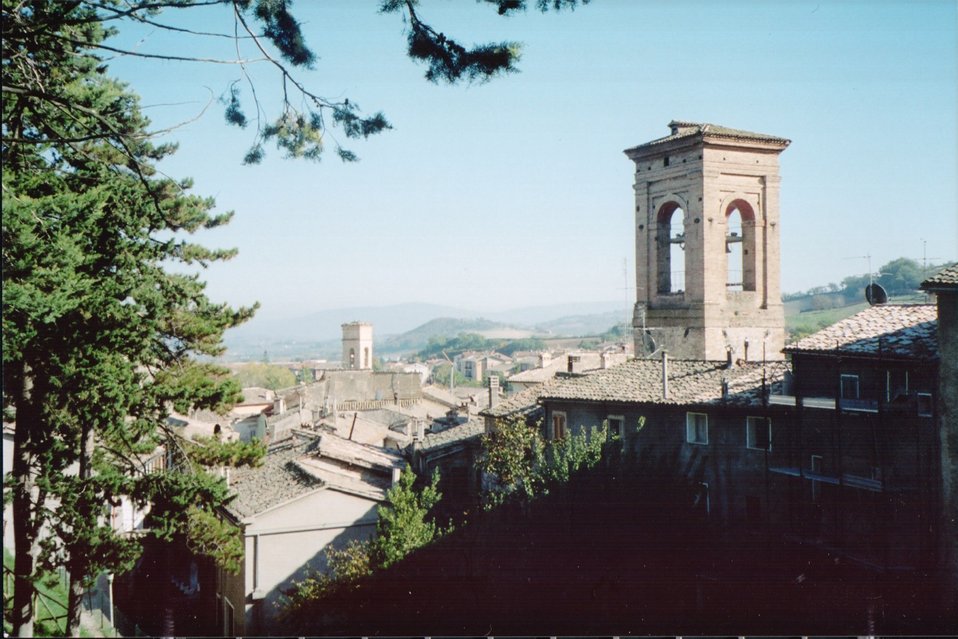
Sight of the ancient part of Esanatoglia, a town and comune in the Marche province of Italy.